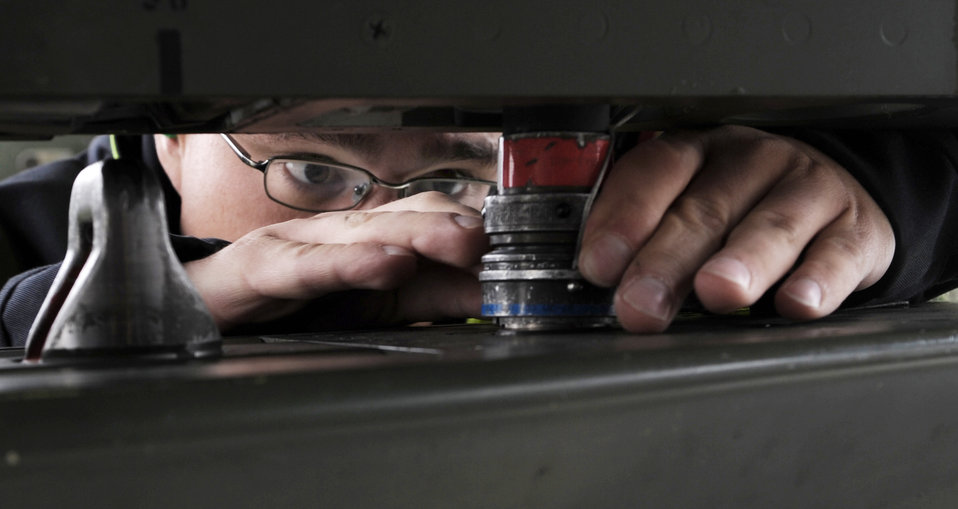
Exercise Mountain Roundup

Staff Sgt. Sascha Krems, a maintenance journeyman from the German air force Flying and Training Center at Holloman Air Force Base, N.M., performs pre-flight maintenance on a PA-200 Tornado Oct. 21, 2009, during the Mountain Roundup exercise at Mountain Home AFB, Idaho. Mountain Roundup is a large-force exercise running from Oct. 15 through Oct. 30 and includes participants from the German air force, U.S. Air Force, U.S. Navy and U.S. Marines.